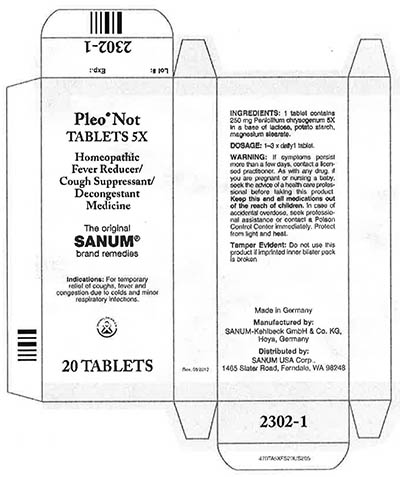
RECALLED – Homeopathic Drug Products

March 18, 2014 – Product Recall – Terra-Medica Issues Voluntary Nationwide Recall of Specified Lots of Pleo Homeopathic Drug Products Due to the Potential for Undeclared Penicillin.